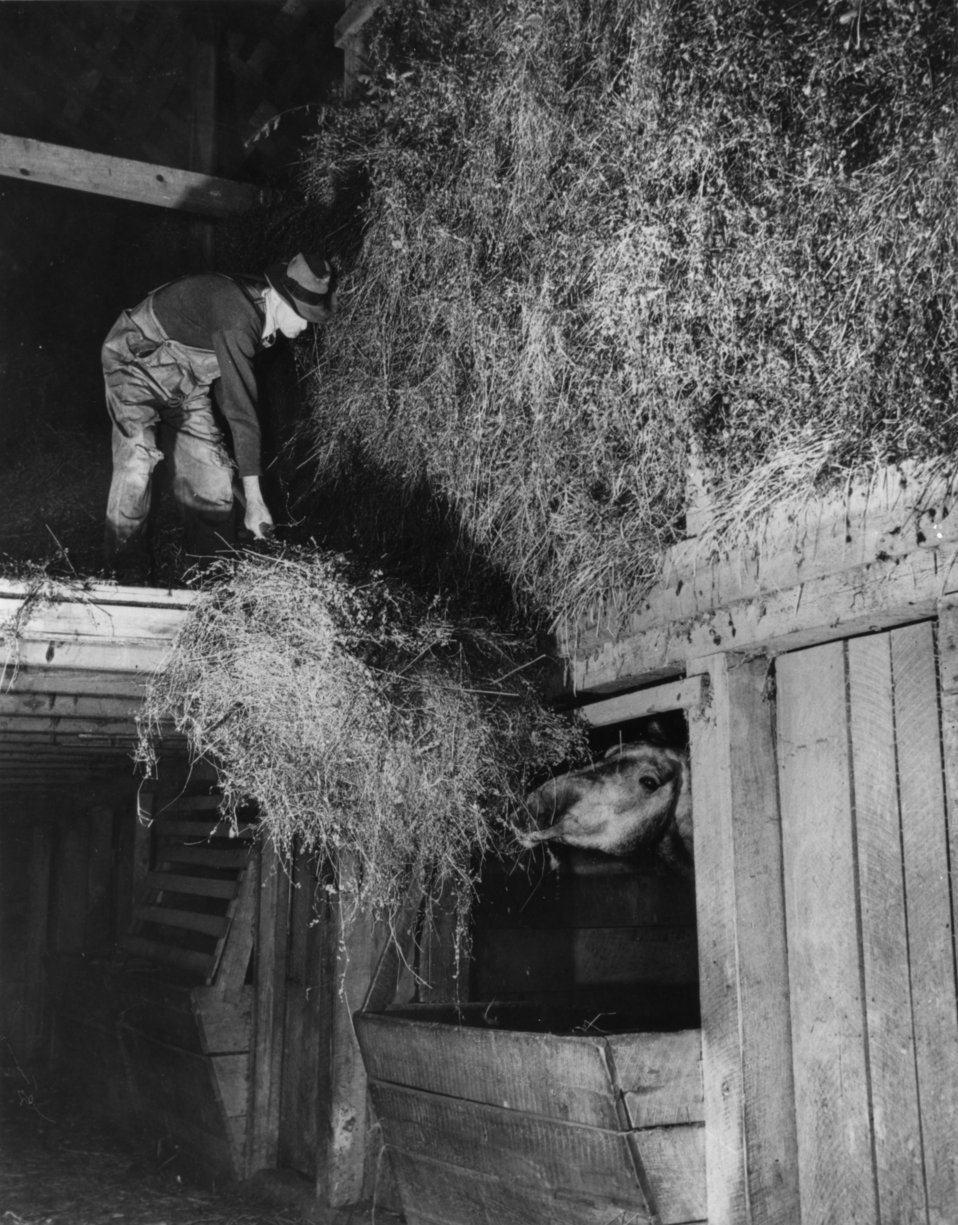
Early settlers at Oak Ridge